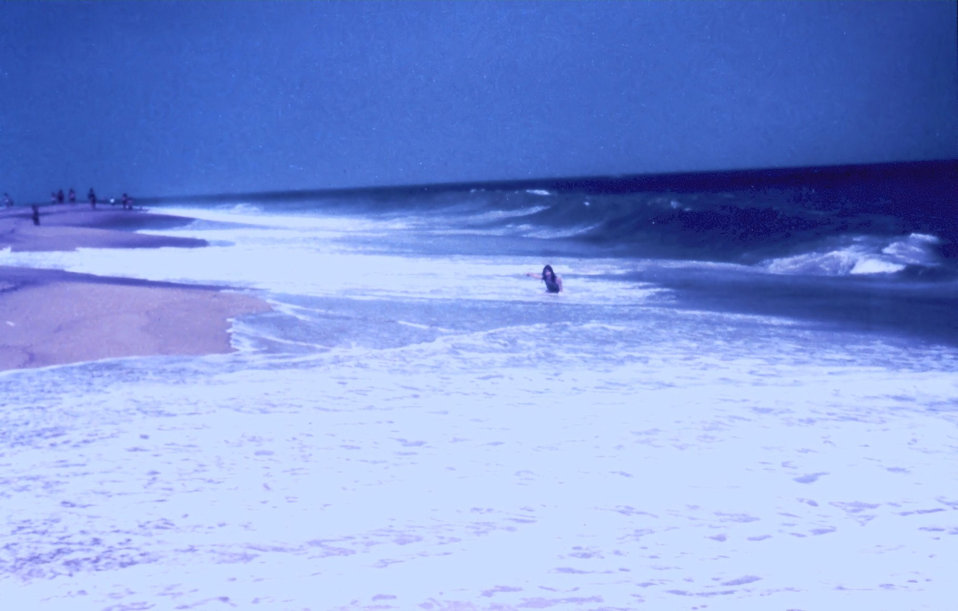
A Cape Cod beach scene.